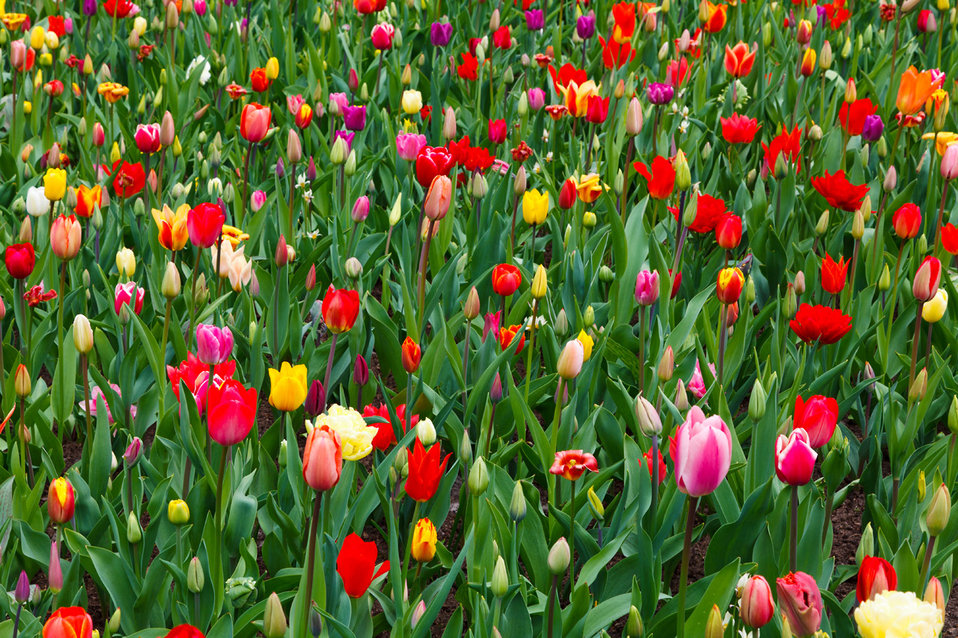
Vivid colorful flowers

Various colorful flowers in the garden.